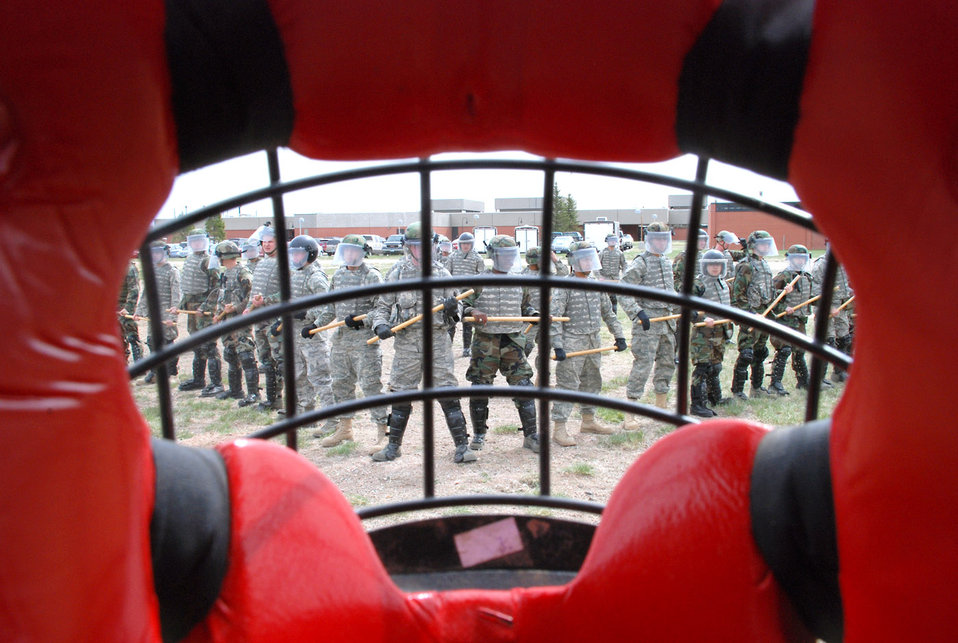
Keep your distance

Security forces Airmen form a wedge during confrontation training April 28 at F.E. Warren Air Force Base, Wyo. As seen through the camera, the